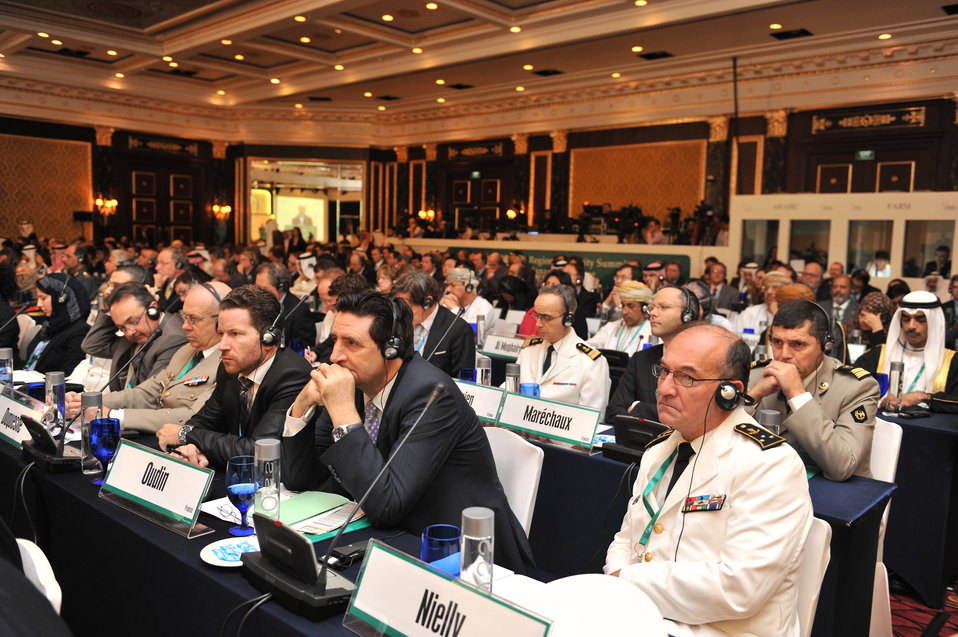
Delegates at the Seventh IISS Regional Security Summit Manama Dialogue listen to the speaker in Bahrain, December 4, 2010.